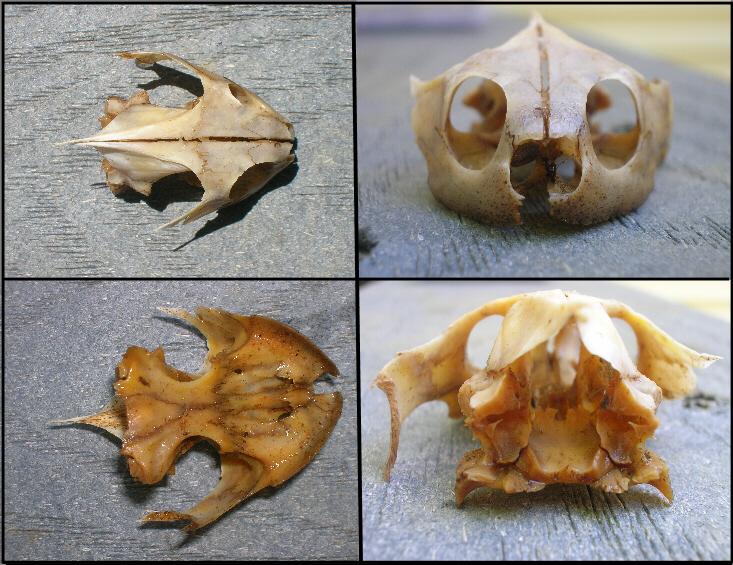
Diamondback terrapin skulls